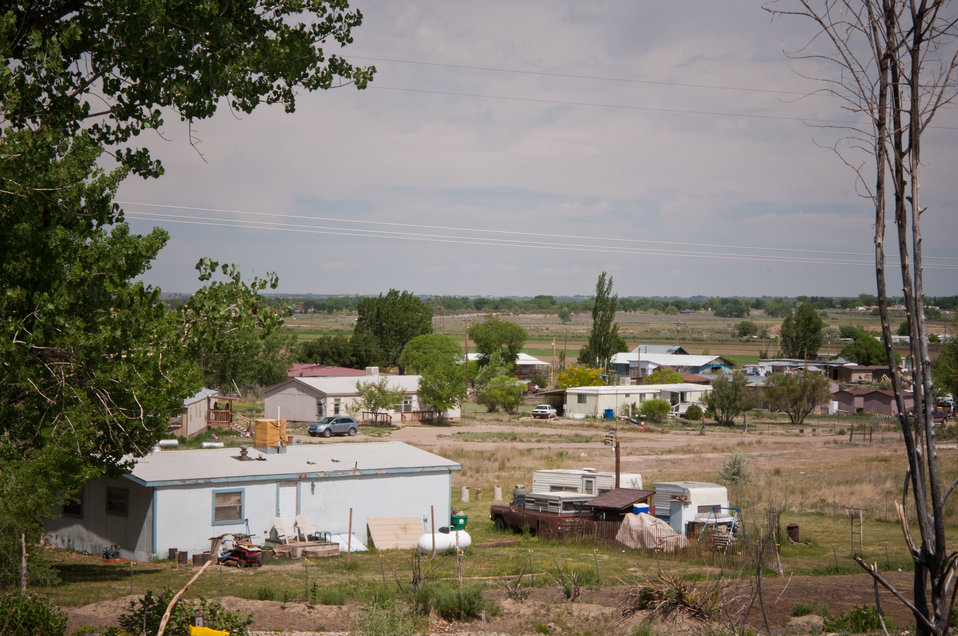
The U.S. Department of Agriculture (USDAS) StrikeForce Initiative in cooperation with public and private organizations offers many economic grants, loans and conservation contracts through USDA's Rural Development (RD) and the Natural Resources of Conservation Service (NRCS) for areas of rural America with a high percentage of people living below the poverty level and considered economically distressed.